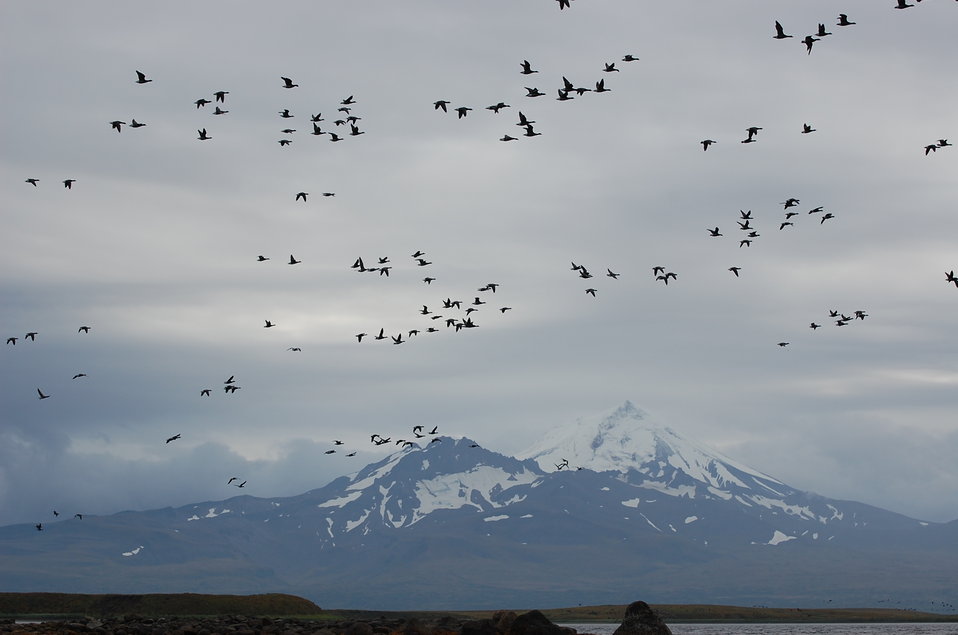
Brant at Izembek Lagoon, Izembek National Wildlife Refuge